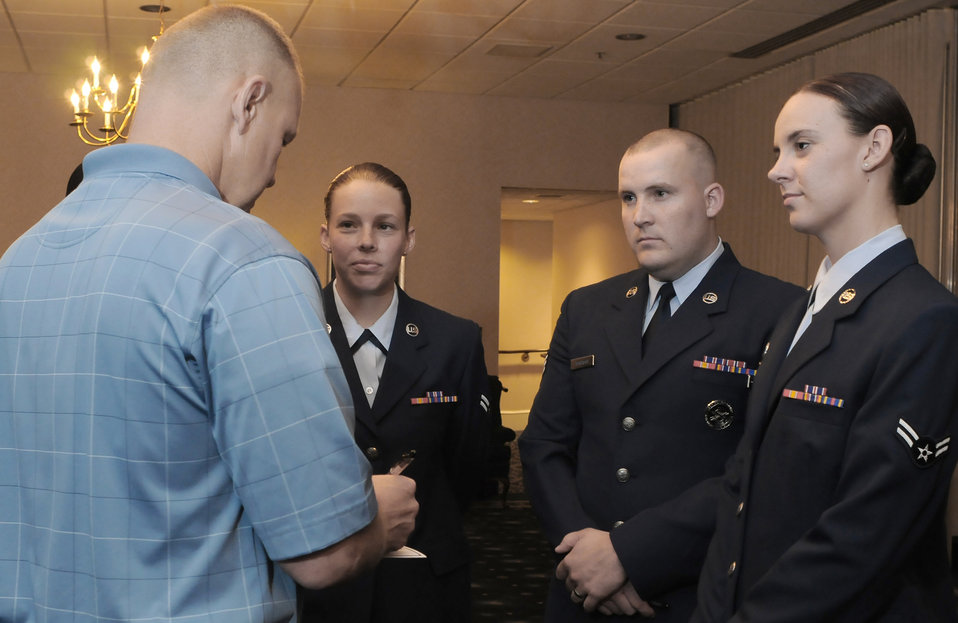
Chief master sergeants of the Air Force gather for dedication

Chief Master Sgt. Jim Roy speaks with Airmen after a Chief Master Sergeant of the Air Force Room dedication ceremony May 26 at the Bolling Club at Bolling Air Force Base, D.C. The room was dedicated to honor the Air Force's highest enlisted position and provided an opportunity for the newest generation of Airmen to interact with previous generations. Chief Roy was recently selected to replace Chief Master Sgt. of the Air Force Rodney J. McKinley upon his retirement.